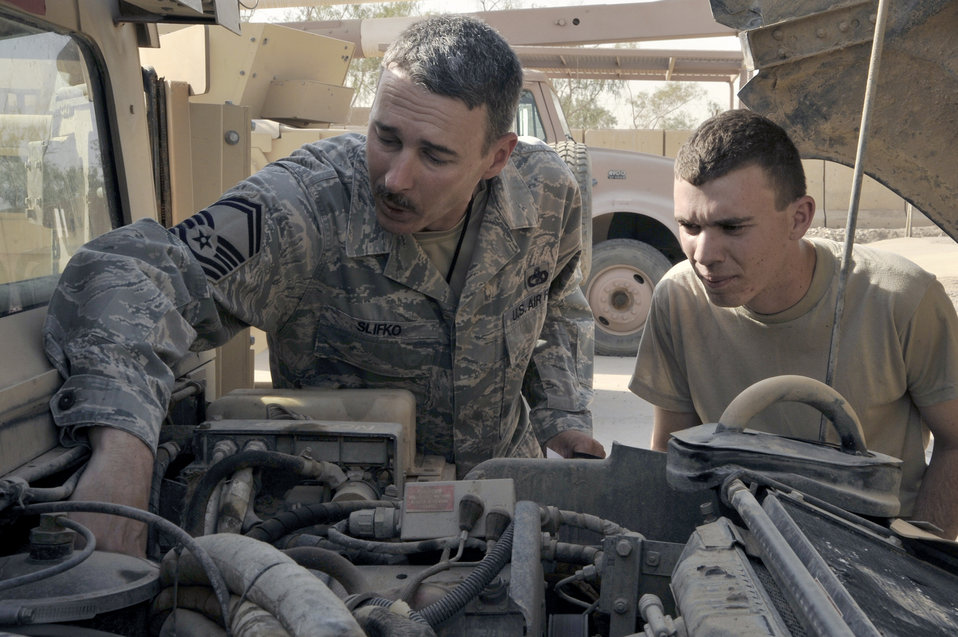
Following Dad's footsteps

Senior Master Sgt. CJ Slifko points out a fuel leak on a Humvee to his son, Airman 1st Class Ryan Slifko, June 19, 2010, at Sather Air Base, Iraq. Airman Slifko joined the Air Force, went into the same career field, and deployed to the same unit as his father. Sergeant Slifko is the vehicle fleet manager for the 447th Expeditionary Logistics Readiness Squadron. Airman Slifko is a vehicle mechanic with the 447th ELRS.